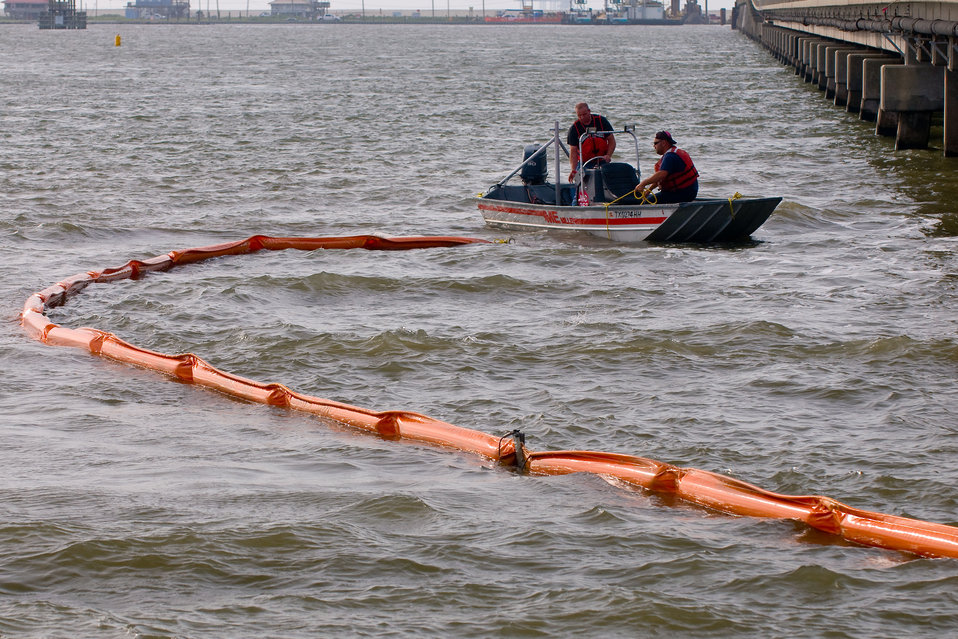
Deploying boom

May 14, 2010. Deploying boom at Grand Isle, La.